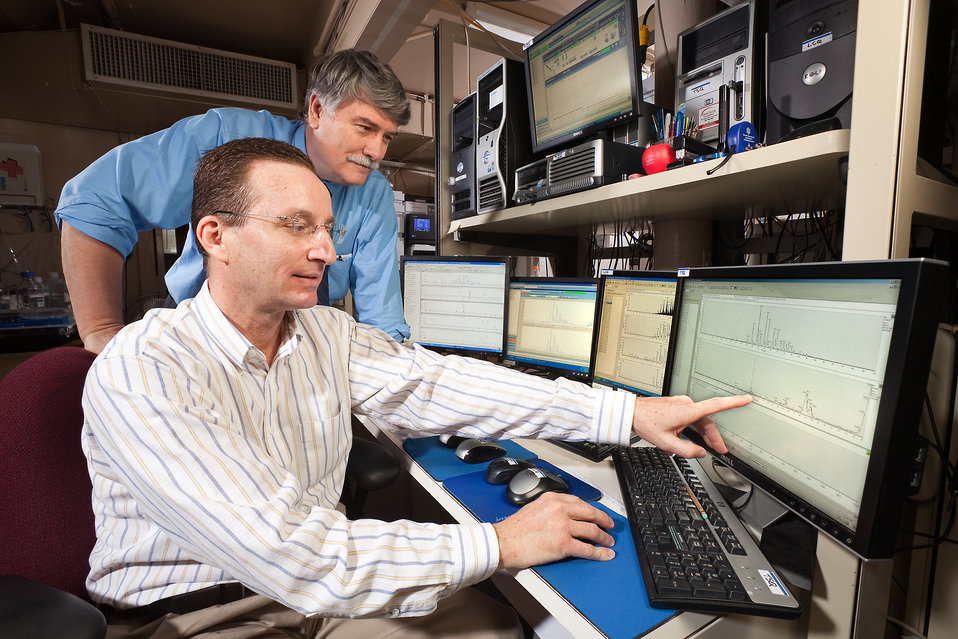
U.S. Department of Agriculture (USDA) Agriculture Research Service (ARS) chemists Craig Byrdwell (foreground) and James Harnly review data from one of the liquid chromatography/mass spectrometry machines used in a process called “triple-parallel mass spectrometry” at the Beltsville Human Nutrition Research Center, Beltsville, MD on Dec. 6, 2011. This procedure is used to analyze the amount of vitamin D in milk, orange juice, and dietary supplements.